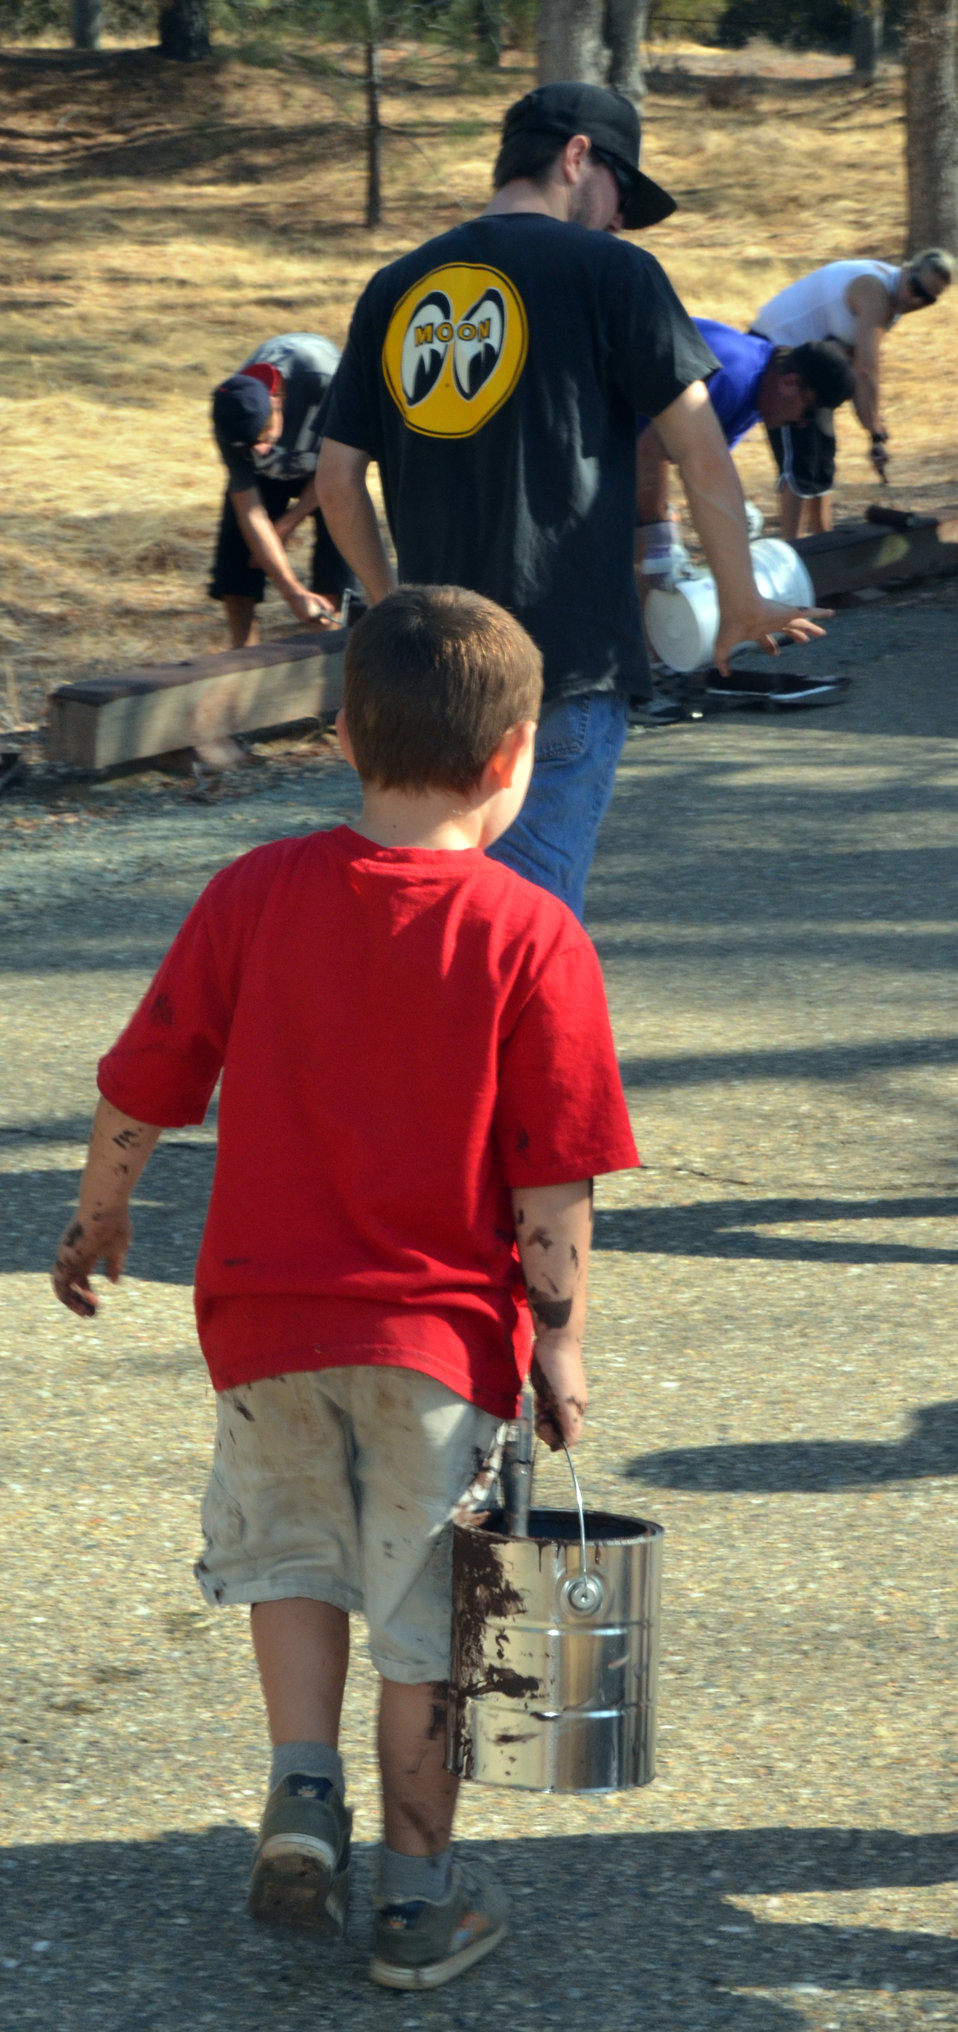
It ain't heavy ... (National Public Lands Day 2012)

... it's my paint bucket. A young volunteer at New Hogan Lake takes his gear and heads for the shed during National Public Lands Day, Sept. 29, 2012. U.S. Army Corps of Engineers park staff and an army of volunteers celebrated the day with park improvement projects, camaraderie and food.